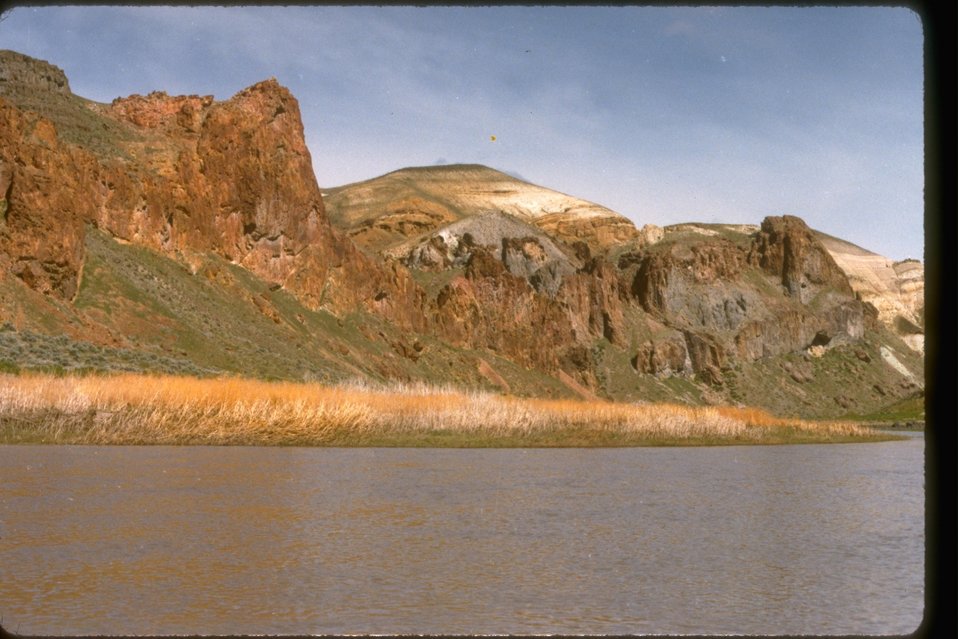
Birch Creek and the Owyhee Mountains in the Owyhee Breaks Wilderness Study Area. OR 3-59